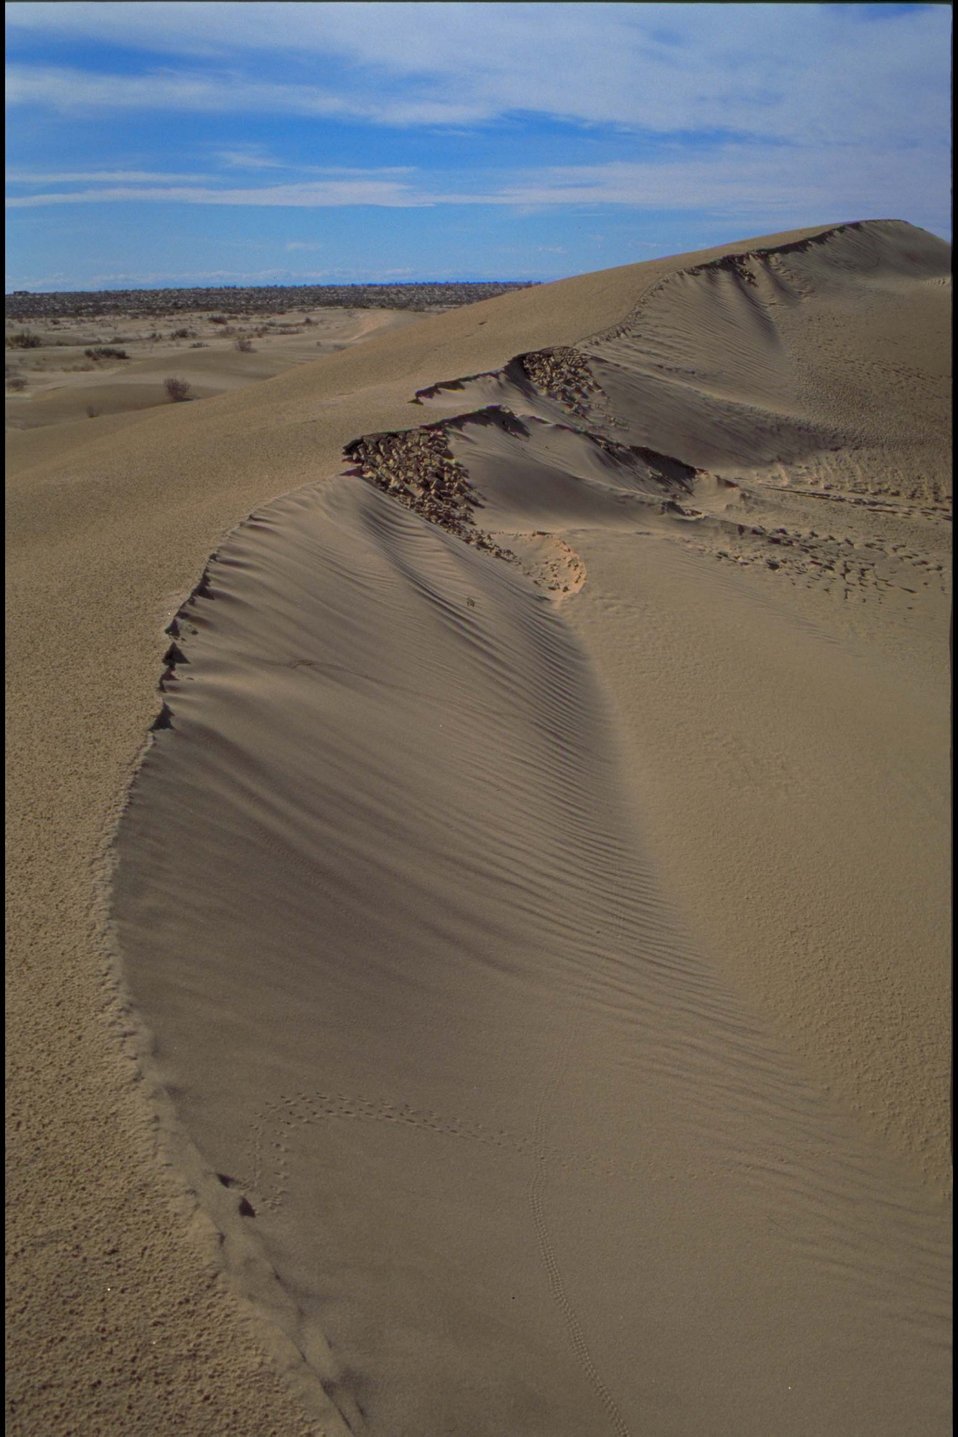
Sand dunes in the California desert